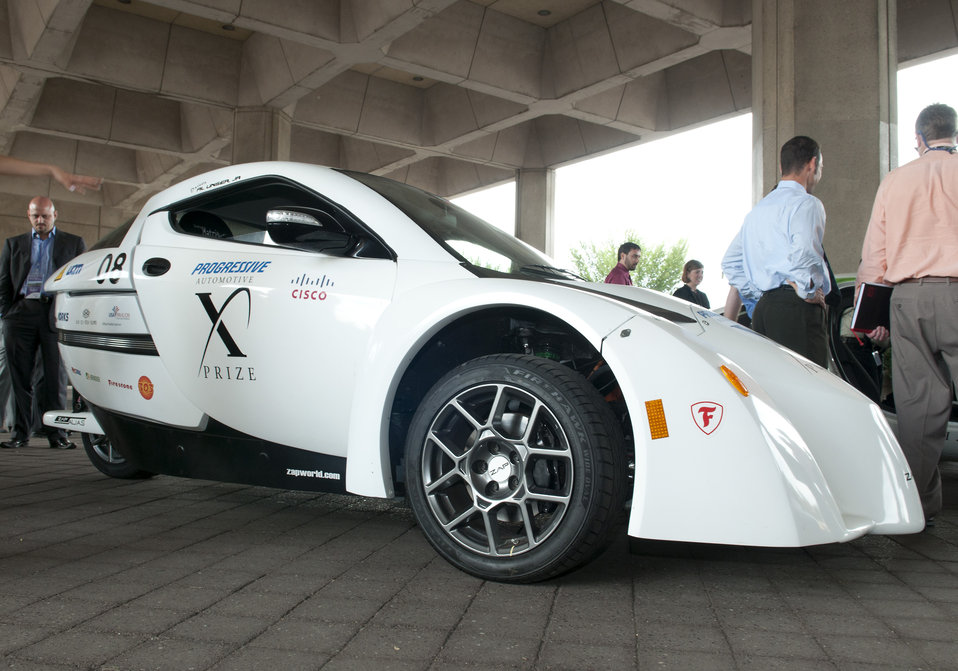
DSC 3640 edit